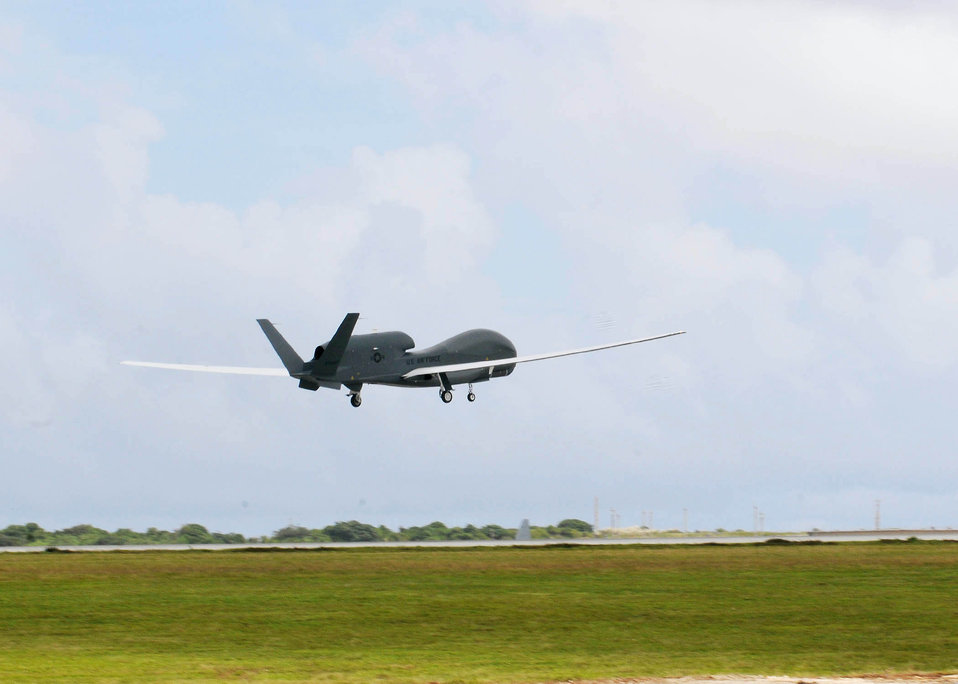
Global Hawk's first flight

An RQ-4 Global Hawk takes off Oct. 7, 2010, from Andersen Air Force Base, Guam. This was its first take-off since its arrival Sept. 20, 2010 and it's the only permanently stationed aircraft on Andersen AFB.